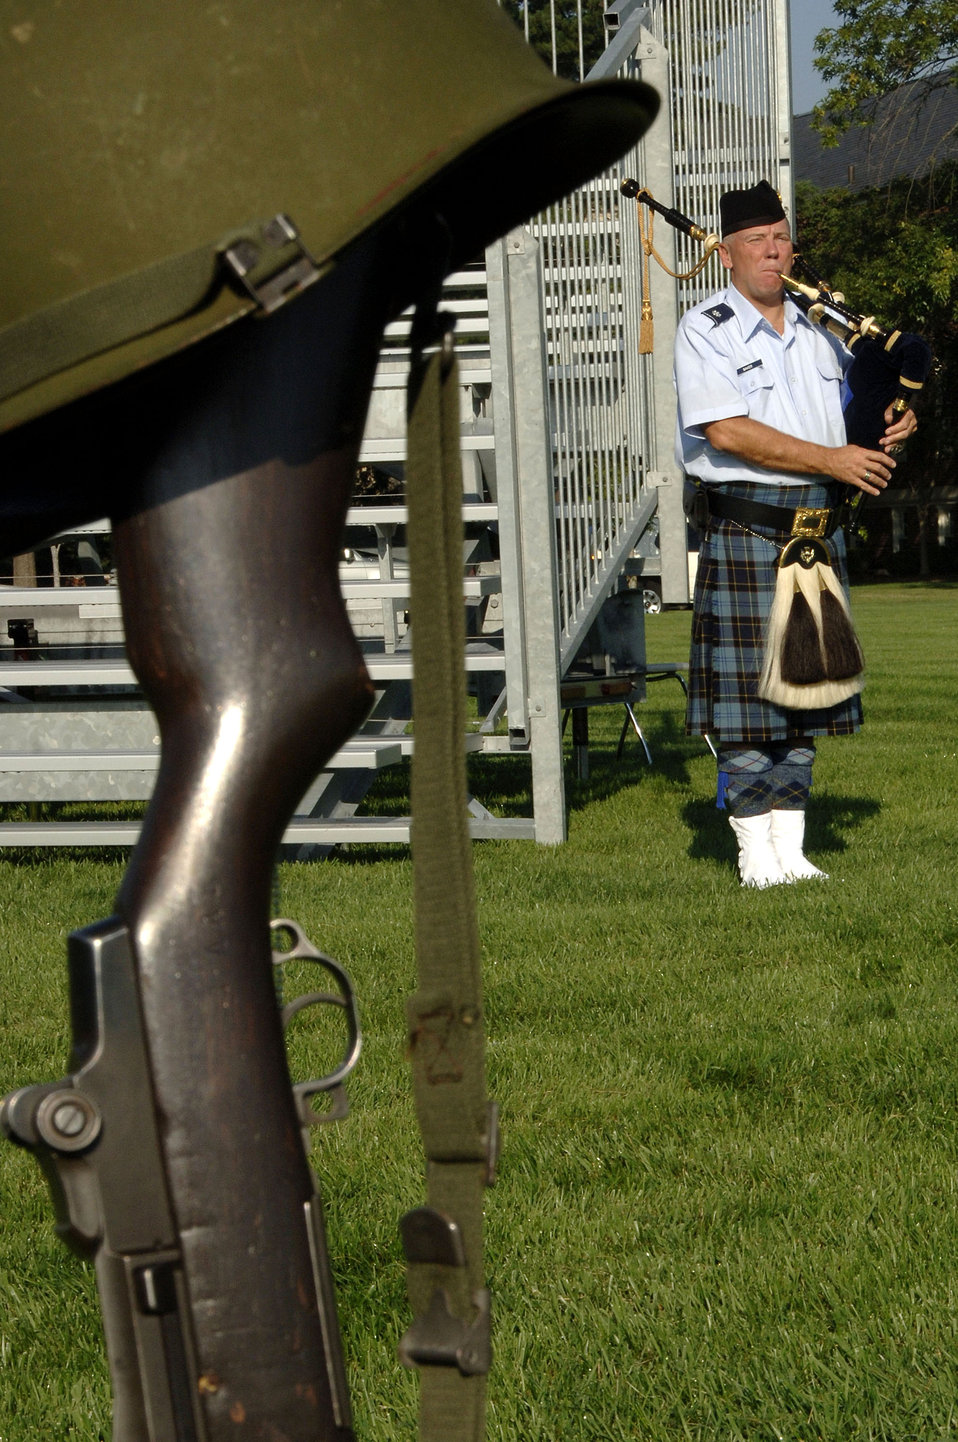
POW/MIA ceremony at Scott AFB

Lt. Col. Ken Baker prepares to play